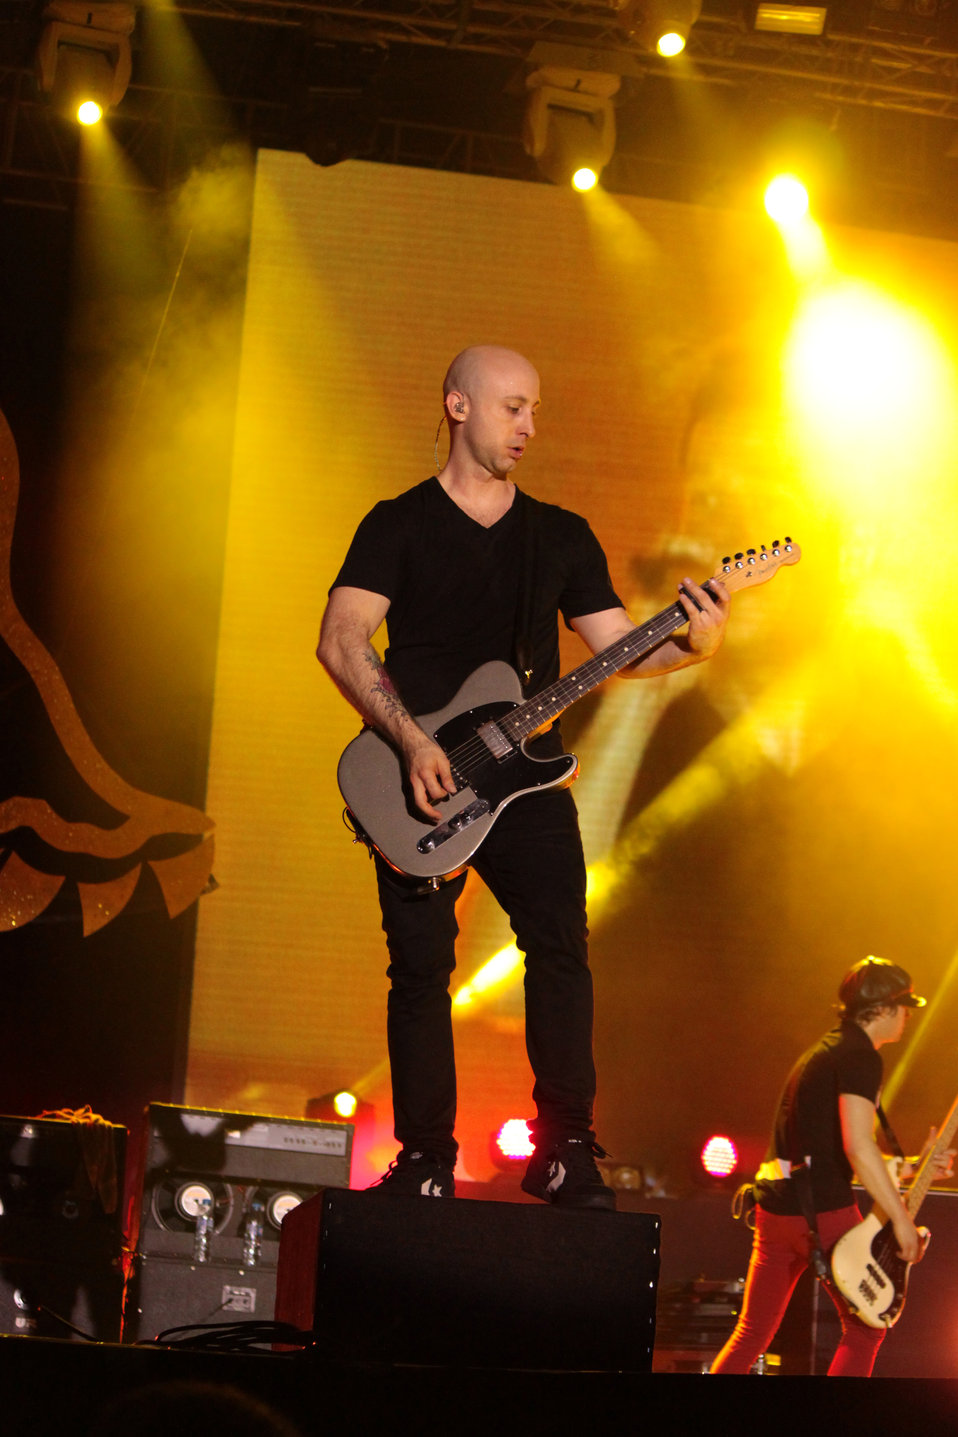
Jeff Stinco of Simple Plan at the MTV EXIT concert in Hanoi

A great concert that attracts 40,000 fans in My Dinh Stadium in Hanoi with strong messages against human trafficking.